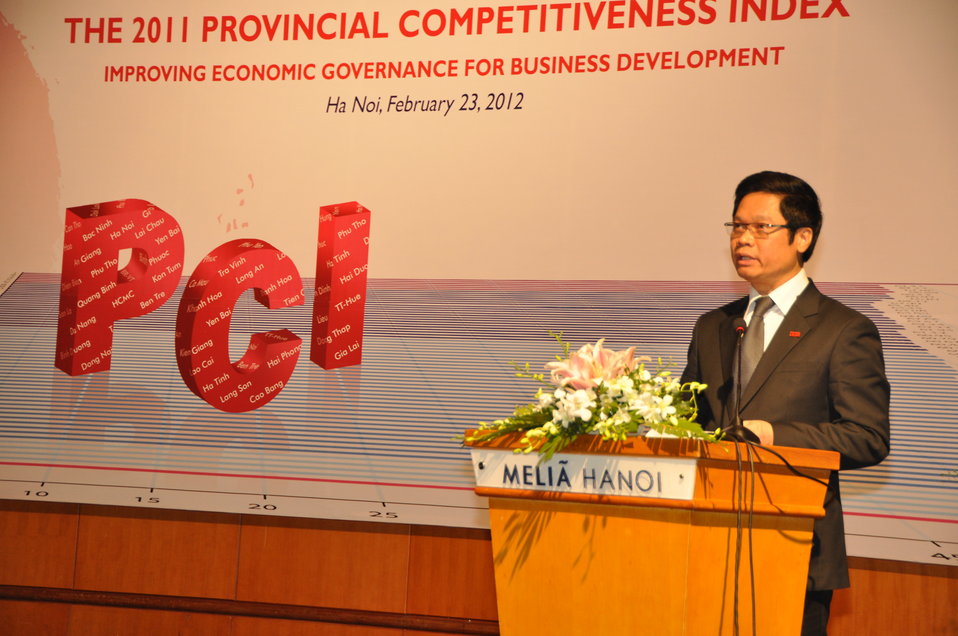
20120223PCI11 Launch Hanoi RNyberg 6446